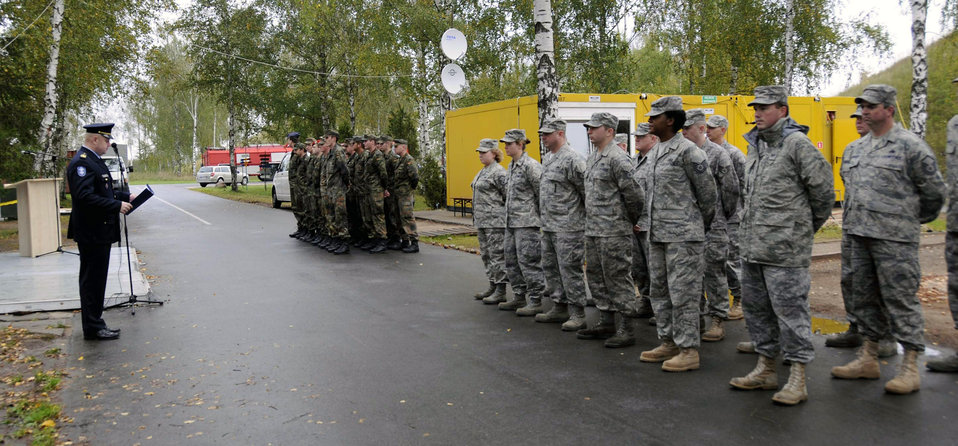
Ceremony marks beginning of U.S. mission in Baltics

Lithuanian official Alvydas Tamosiunas welcomes everyone to the change-over ceremony as the U.S. and German formations wait for the beginning of the ceremony, marking the first day of the U.S. rotation performing the NATO Baltic air policing mission.